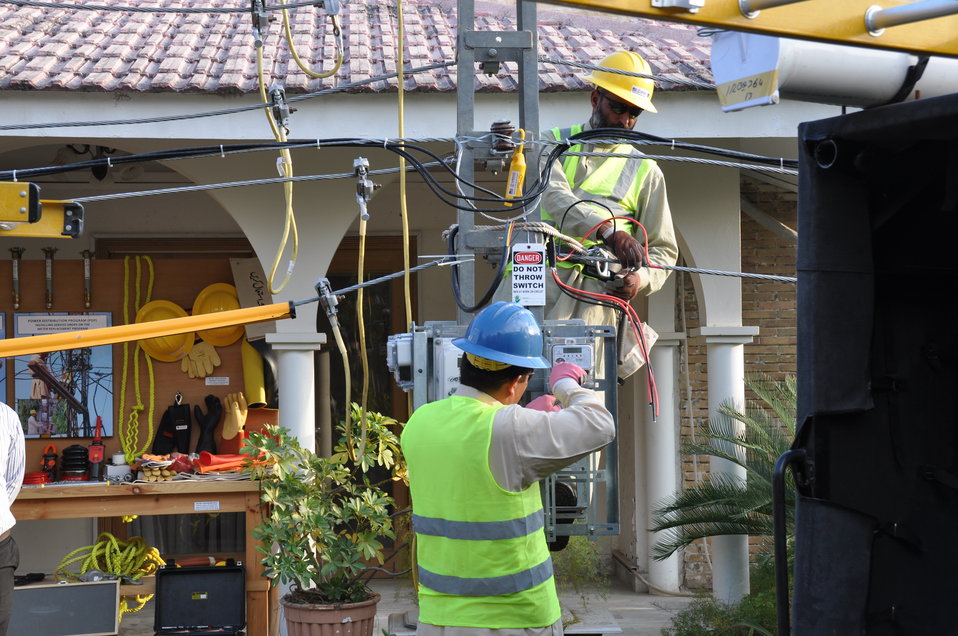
United States Government Strengthens PESCO Field Operations 02